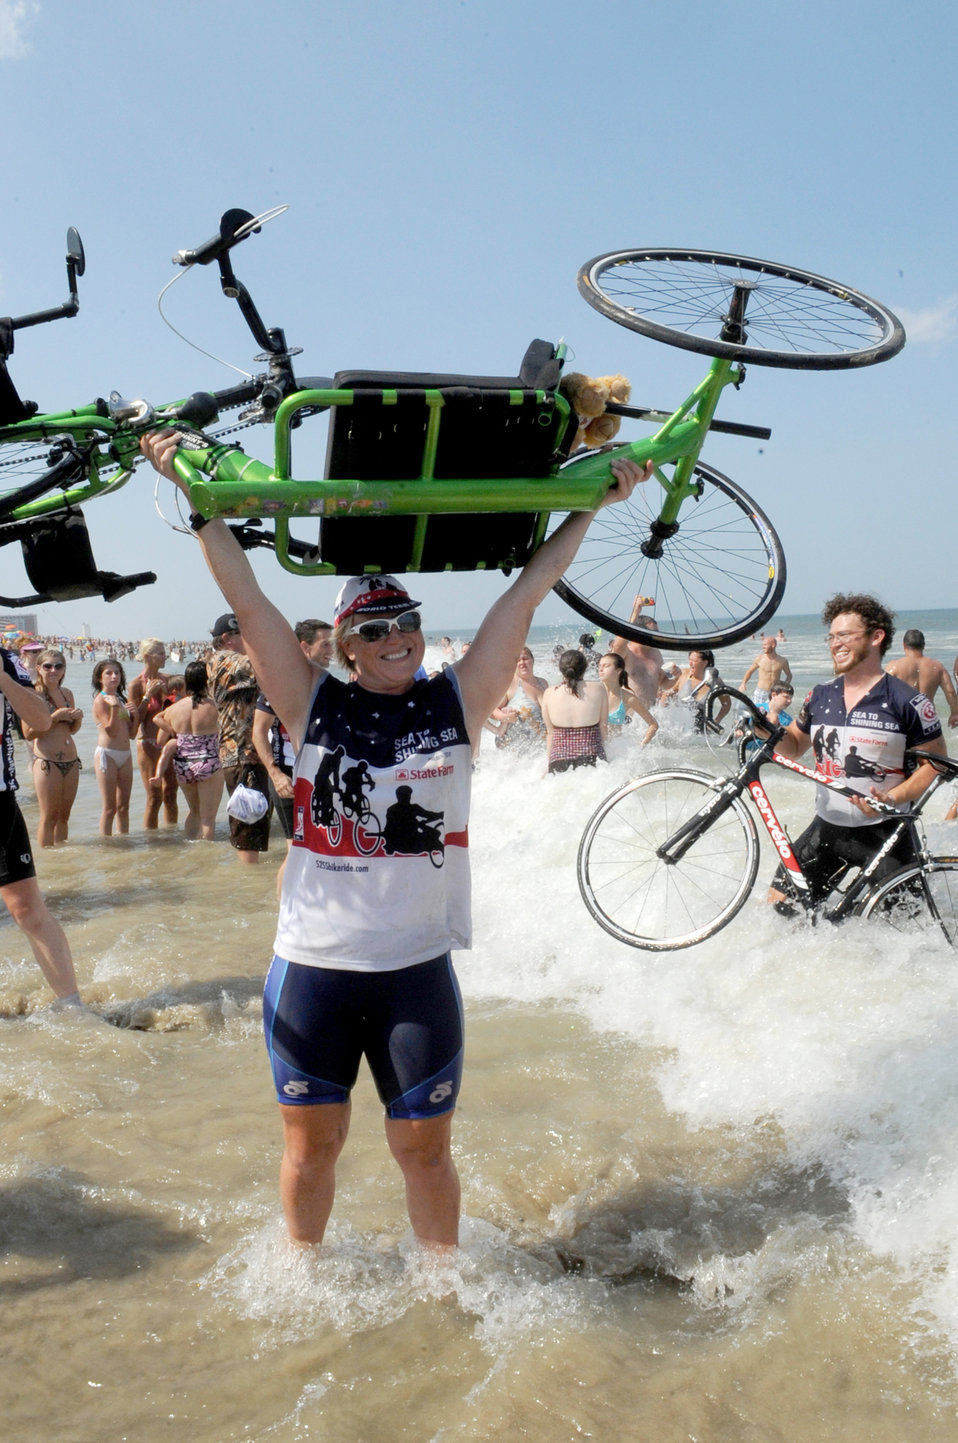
Sea to Shining Sea

Retired Navy Petty Officer 2nd Class Nicolette Maroulis celebrates in the Atlantic Ocean during the closing ceremony of Sea to Shining Sea July 24, 2010, at Virginia Beach, Va. Sea to Shining Sea is a 4,000-mile bike ride that started at the Golden Gate Bridge in San Francisco, and ended in Virginia Beach.